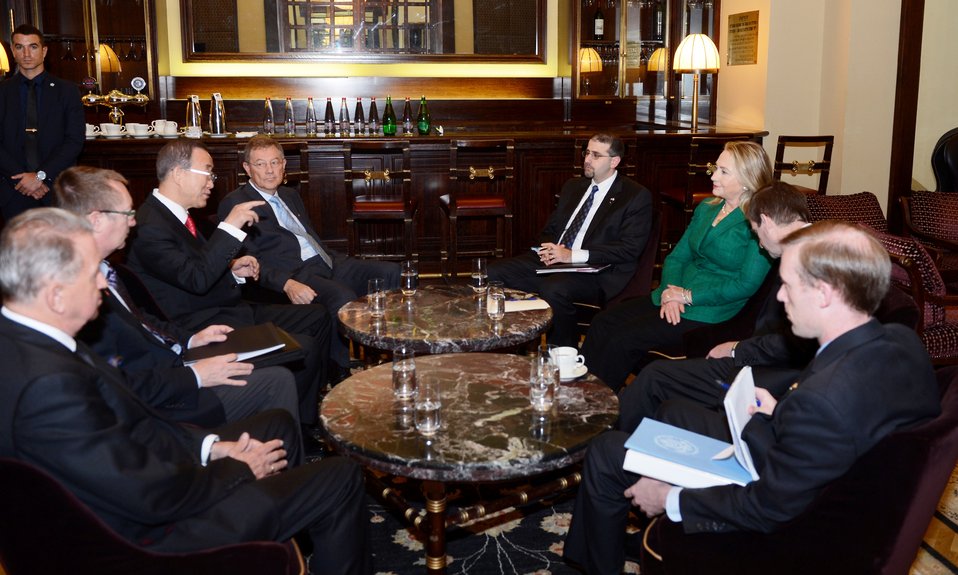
Secretary Clinton Meets With UN Secretary-General Ban Ki-moon

U.S. Secretary of State Hillary Rodham Clinton meets with with UN Secretary-General Ban Ki-moon at the King David Hotel in Jerusalem, November 21, 2012.